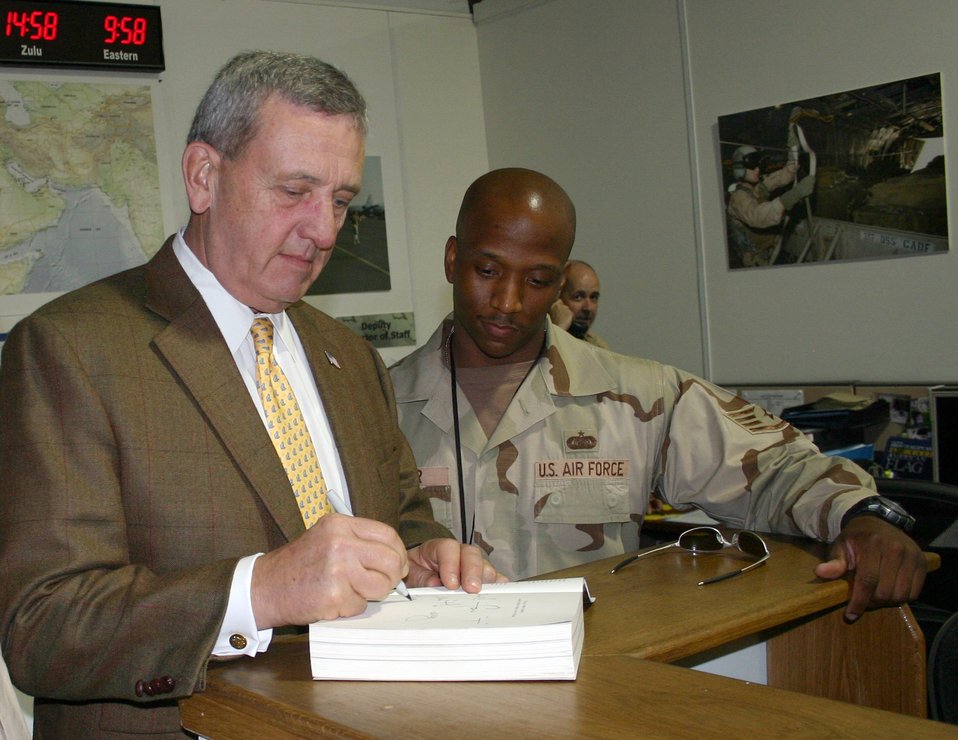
Retired general visits troops

Retired Army Gen. Tommy R. Franks signs his book,